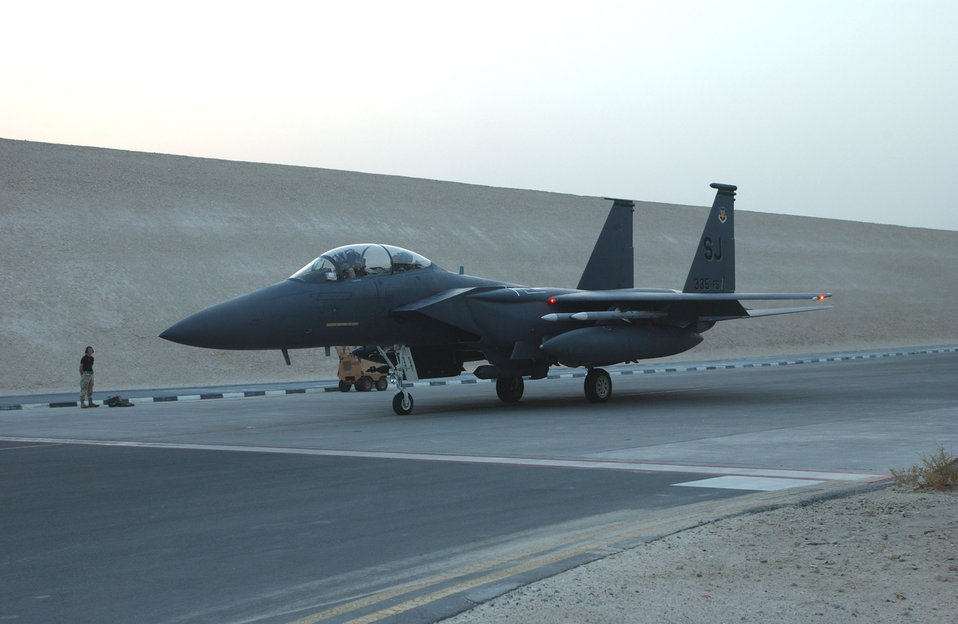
Strike Eagle at dusk

An F-15E Strike Eagle taxis from its protective bunker for a night combat mission over Iraq. The aircraft and crew are deployed to the 335th Expeditionary Fighter Squadron in Southwest Asia from Seymour Johnson Air Force Base, N.C.